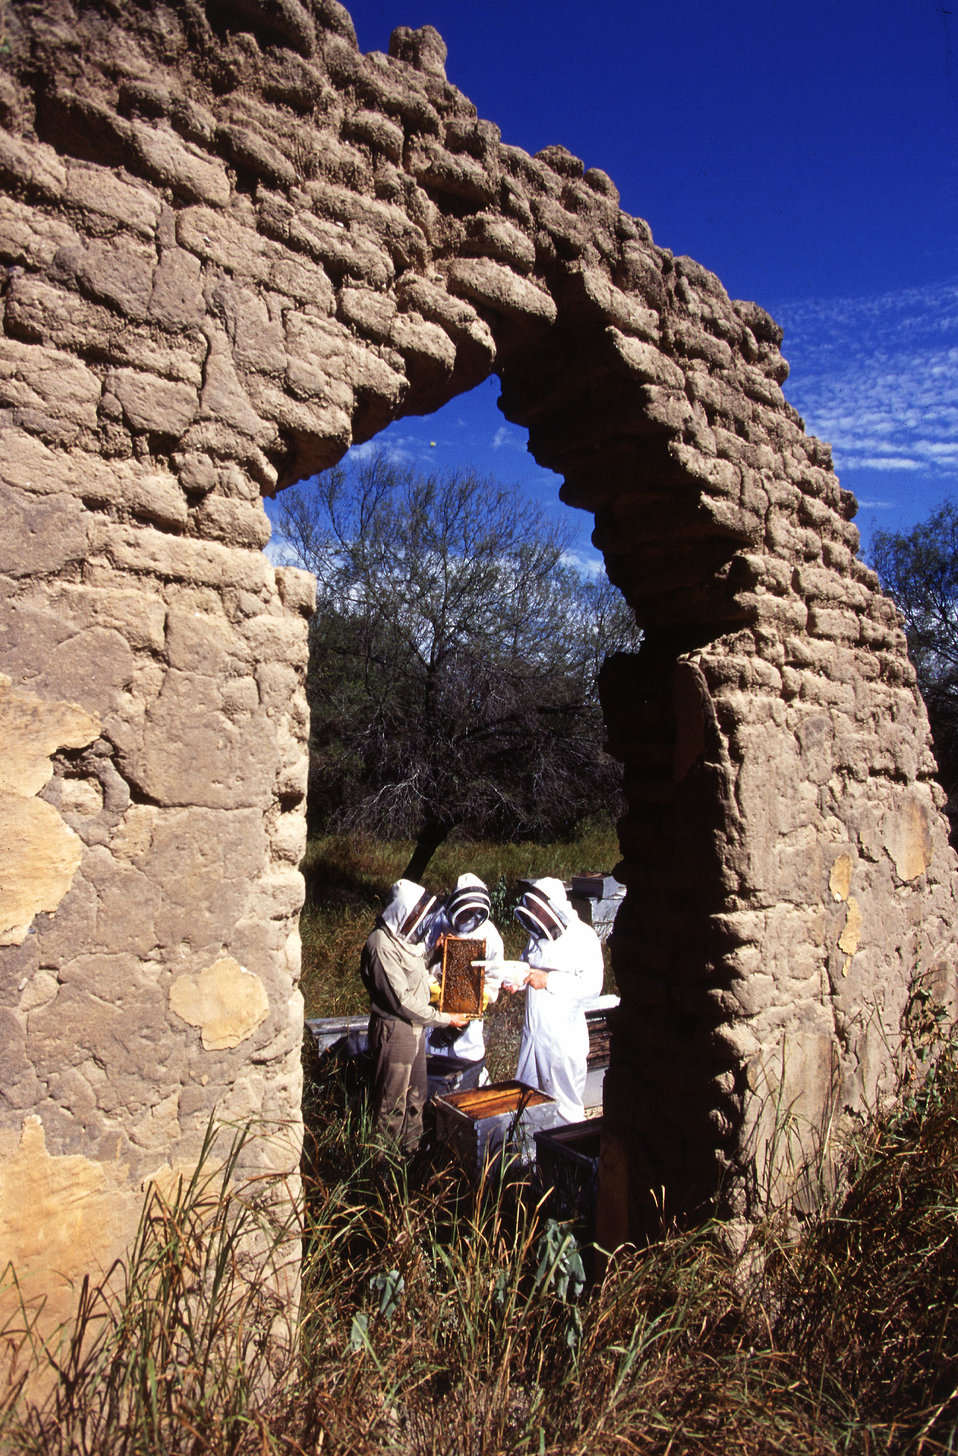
For centuries, beekeeping has been a traditional part of Mexican agriculture and a reliable source of income in rural areas. Scientists in the U.S. have closely followed the arrival of Africanized honey bees and two species of parasitic mites that have created hive management problems and reduced honey production.